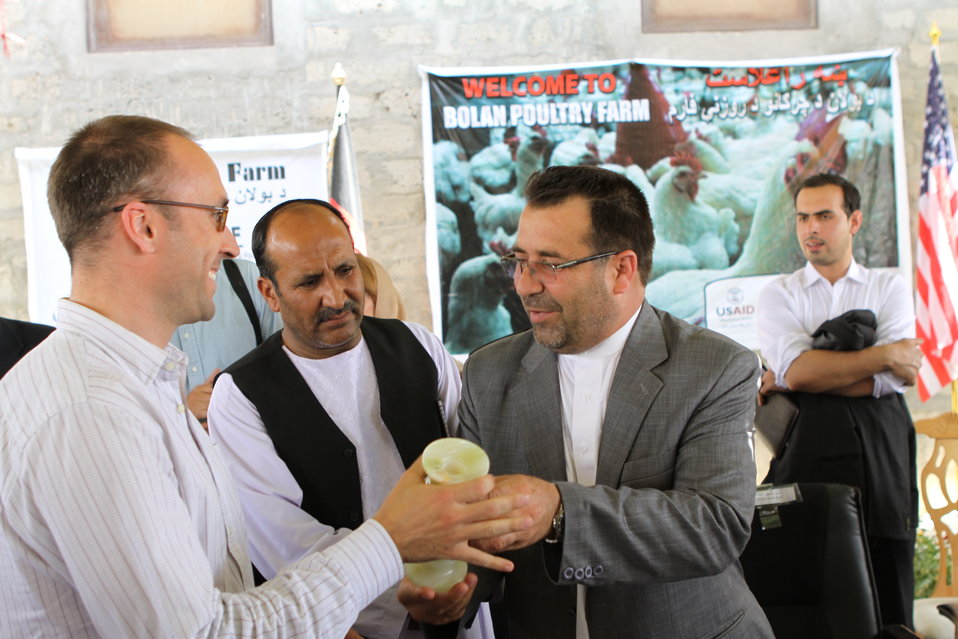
Bolan Poultry Farm